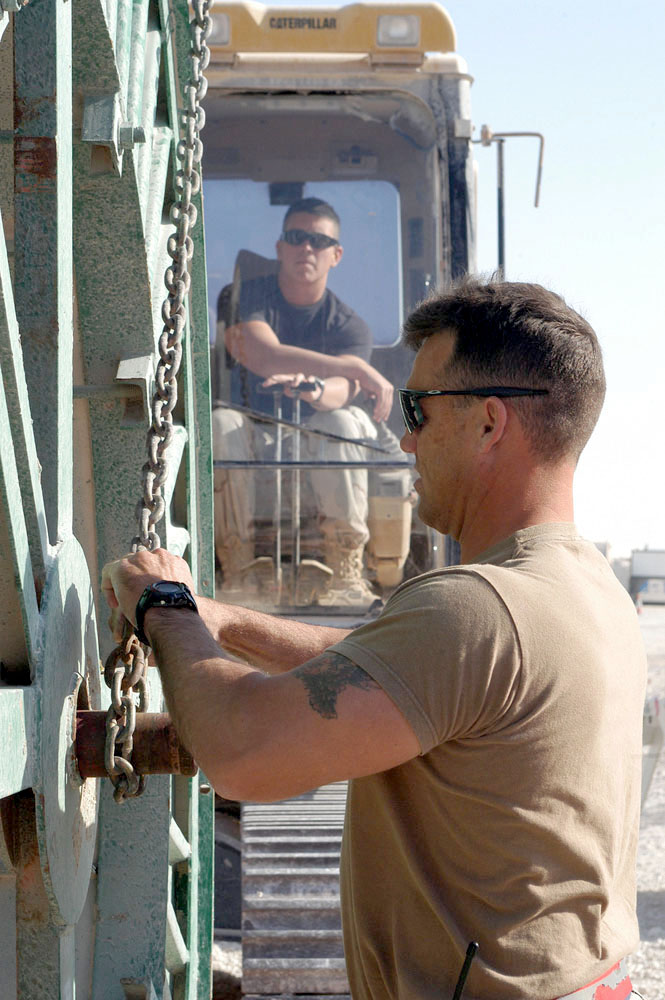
Civil engineers' work noticed every day

SOUTHWEST ASIA -- Master Sgt. Scott Reed attaches a chain to a spool of electrical wire at a forward-deployed location. Sergeant Reed is assigned to the 379th Expeditionary Civil Engineer Squadron.